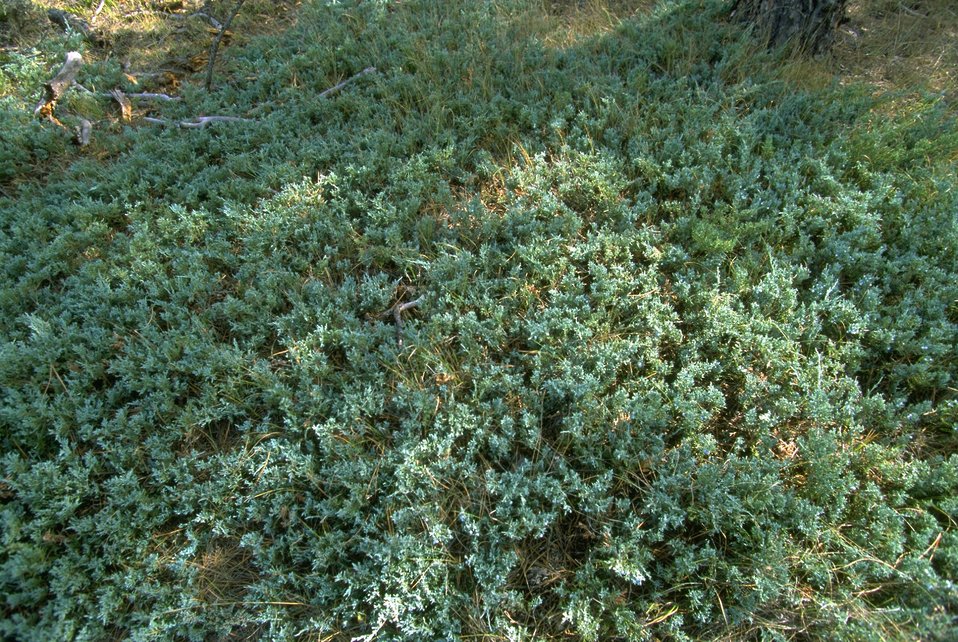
Acid Shale Area of Critical Environmental Concern (ACEC)